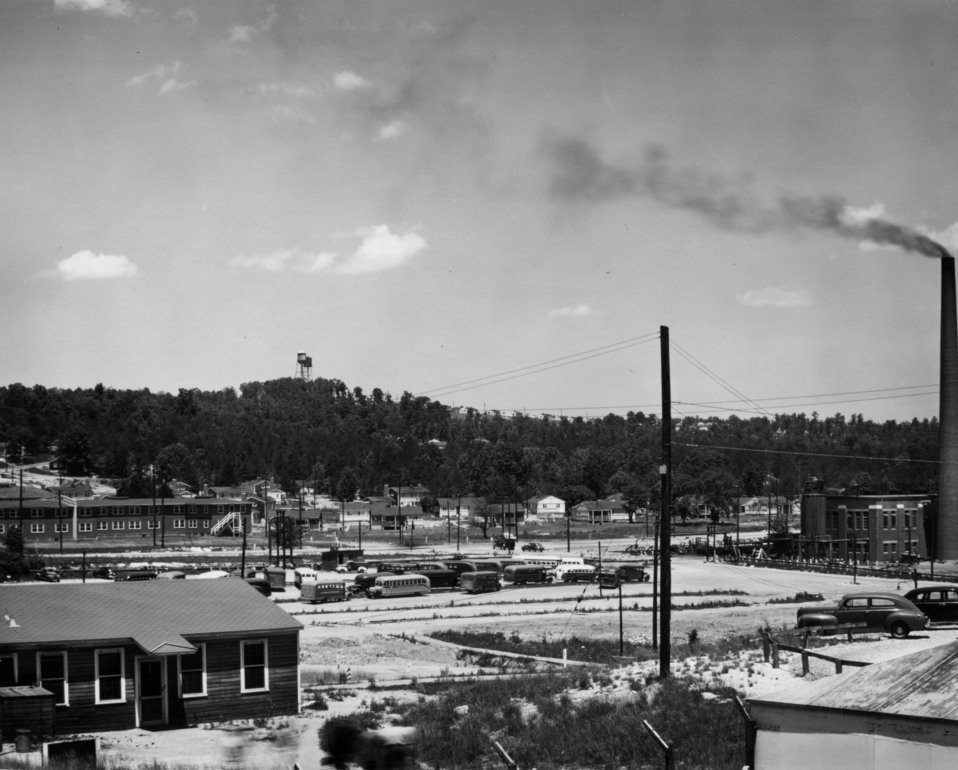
Services at Oak Ridge